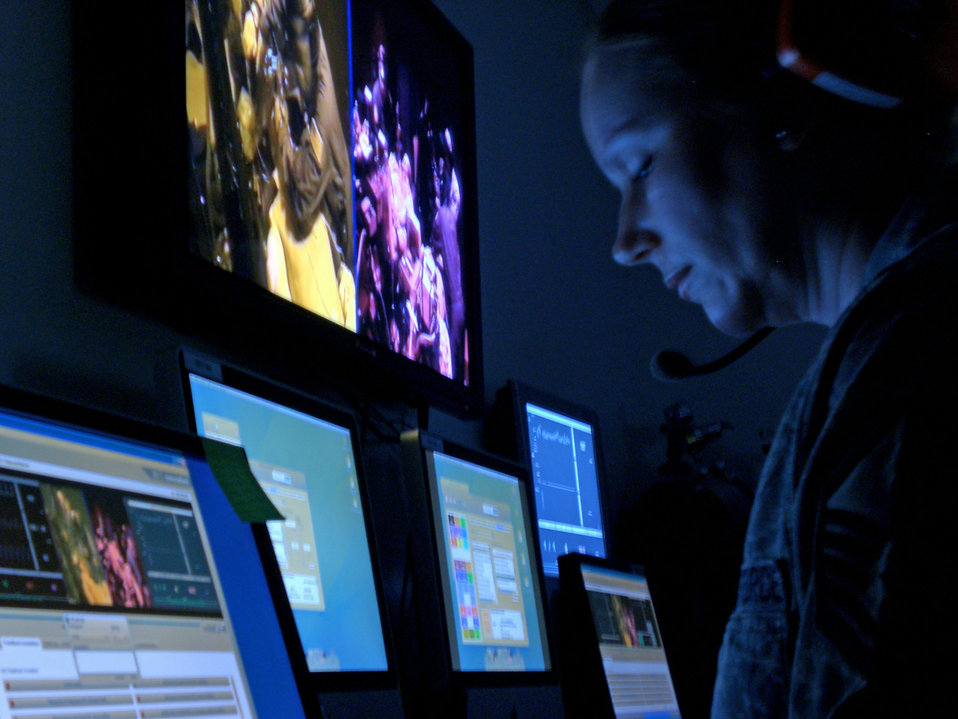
CSTARS trains Air Force trauma teams

Master Sgt. Angelique Boshonek operates the human patient simulator from a control room Feb. 12, 2010, at University Hospital Cincinnati in Cincinnati, Ohio. The facility provides highly realistic training for critical care air transport teams and simulates an Air Force airlifter in flight. Sergeant Boshonek is a cardiopulmonary technician and part of the training cadre for the Air Force's Centers for Sustainment of Trauma and Readiness Skills at University Hospital.